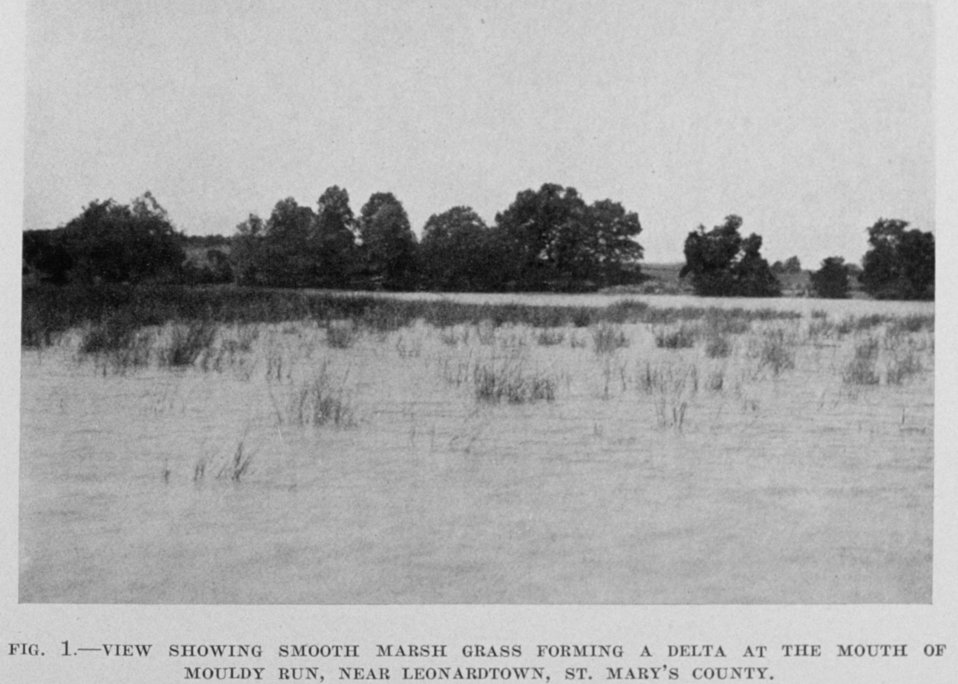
Smooth marsh grass forming a delta at the mouth of Mouldy Run near Leonardtown, Maryland.